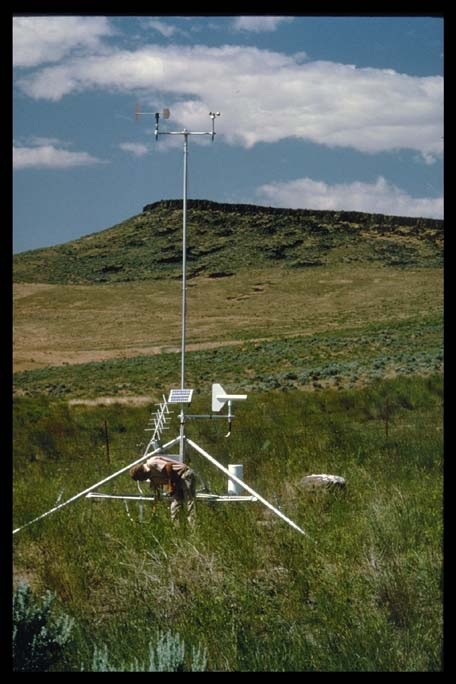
RAWS station